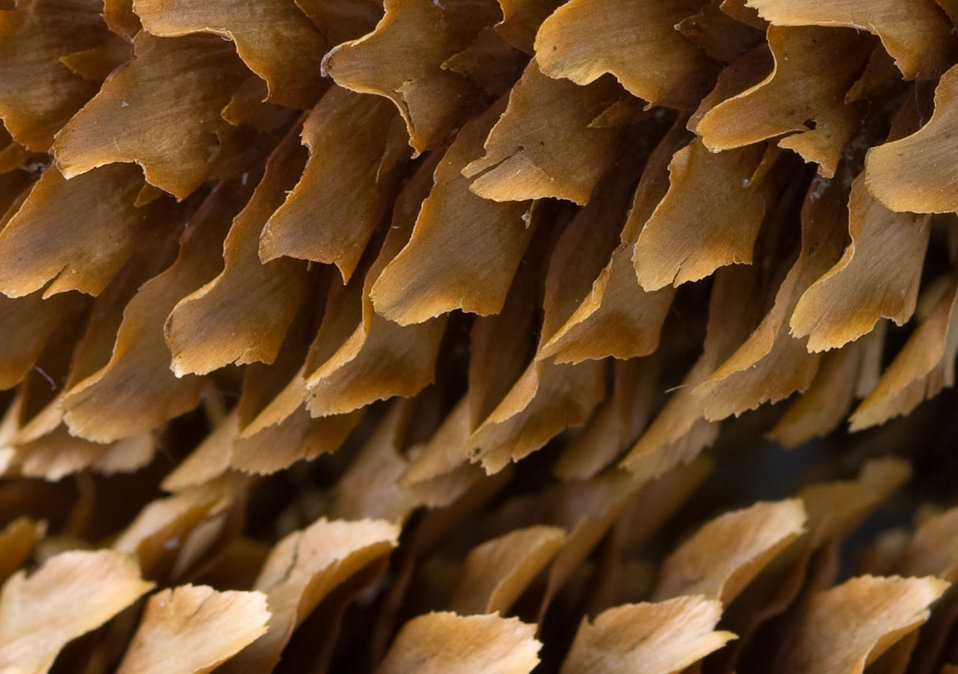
Cone

Close up image of a cone.